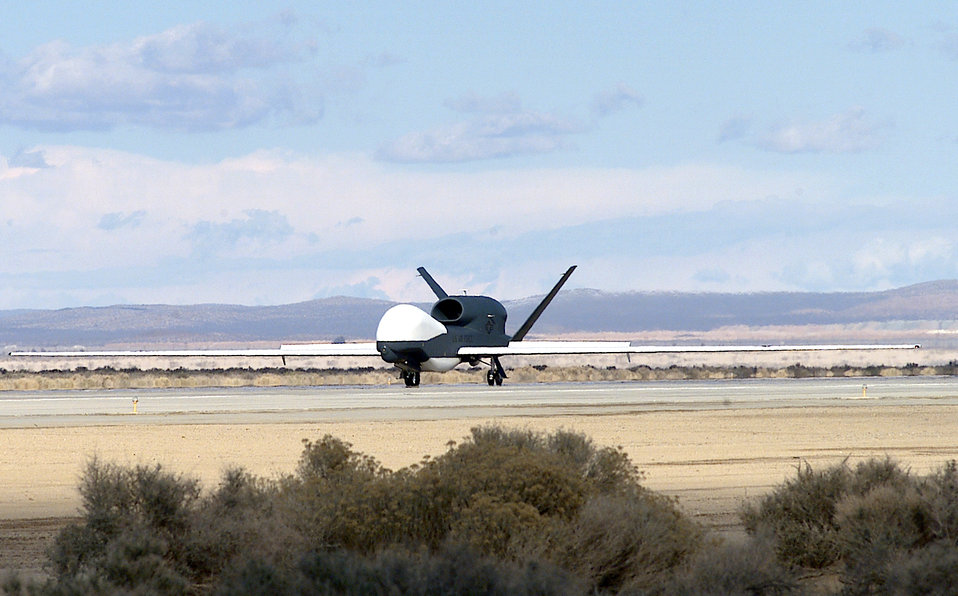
Air Force receives newest Global Hawk

EDWARDS AIR FORCE BASE, Calif. -- The seventh Global Hawk unmanned aerial vehicle lands here after its flight from Air Force Plant 42 in nearby Palmdale, Calif., The UAV was built by lead government contractor Northrop Grumman.